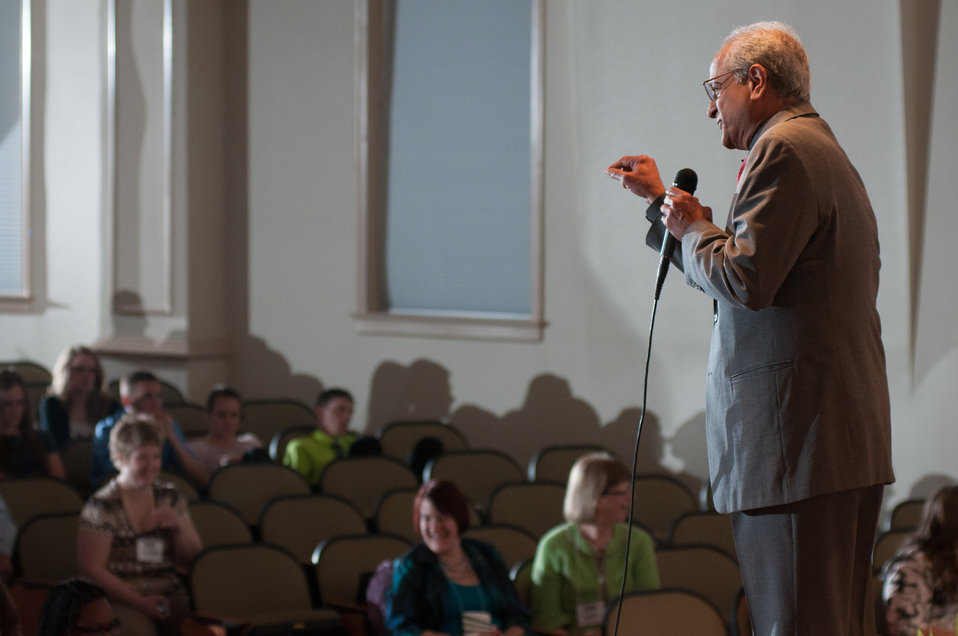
U.S. Department of Agriculture (USDA National Institute of Food and Agriculture Director Dr. Sonny Ramaswamy opened his address about to approximately 300 4-H youth members of the 2013 National 4-H Conference, with a challenge question: “What is the most daunting challenge facing humanity?” The resulting address lead to information about educational opportunities. He closed with a quote from philosopher Confucius: “Find a job you love and you will never have to work again.” on Monday, April 8, 2013 in Chevy Chase, MD. The youth delegates are in grades 10-12 (15-19 years old). The purpose of the conference is to 1) engage 4-H youth in personal development experiences that will increase knowledge, resources, and skills; 2) discuss topics affecting youth and 4-H programming nationwide; and 3) empower and mobilize 4-H youth to create positive social change in their communities in a meaningful and genuine way. The conference also reinforces the rich history of 4-H and its valuable tie to USDA, Cooperative Extension and the Land-Grant University System.